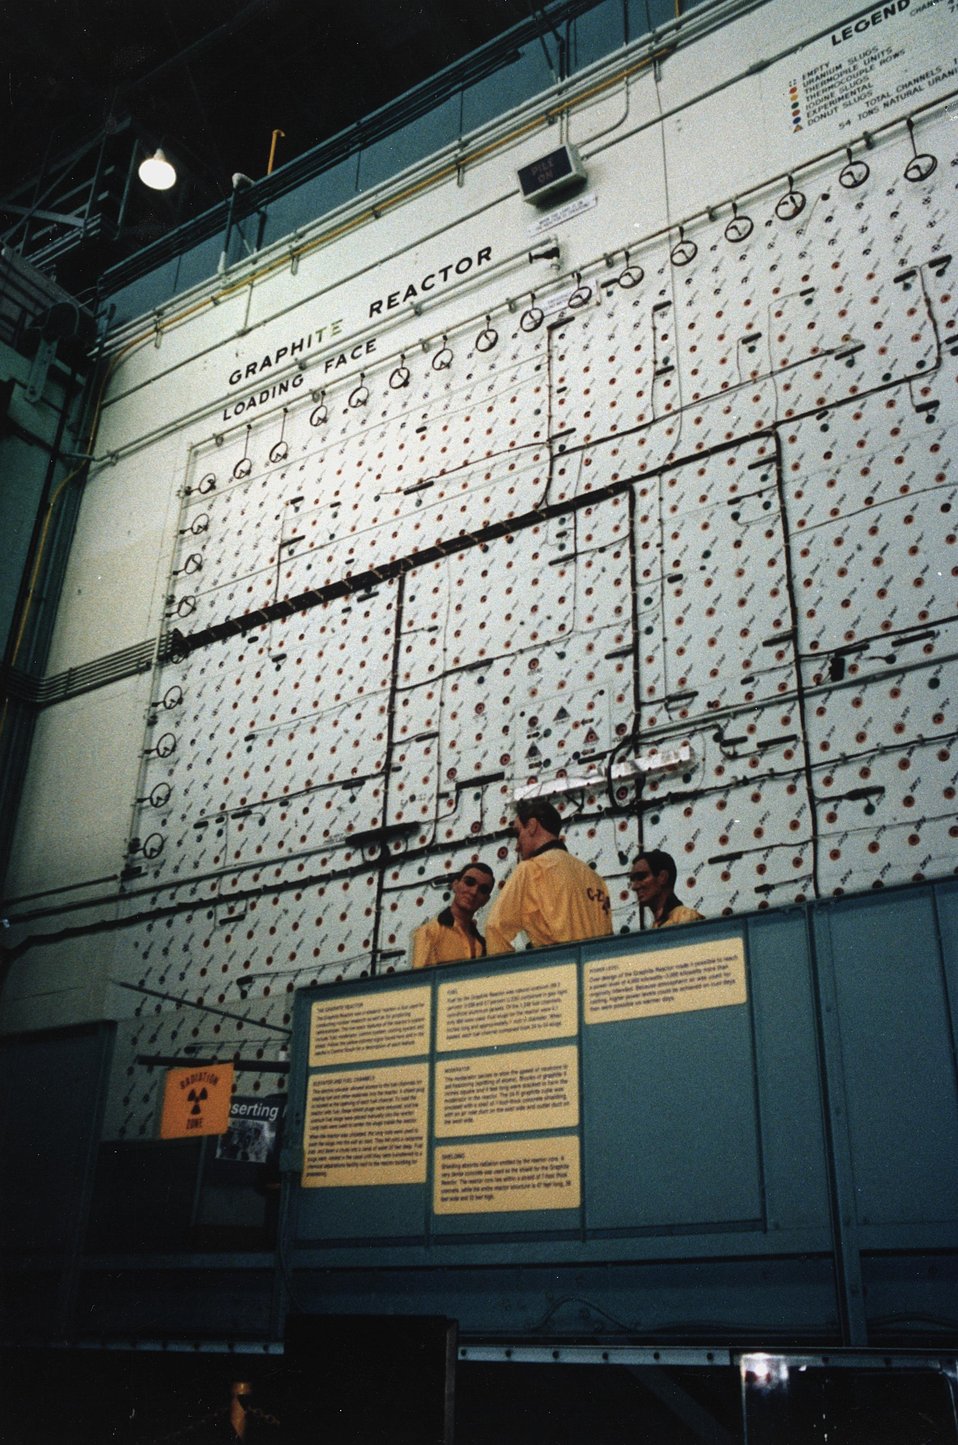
The Oak Ridge Graphite Reactor, code-named 'X-10,' produced the world's first gram quantities of plutonium. c. 1982